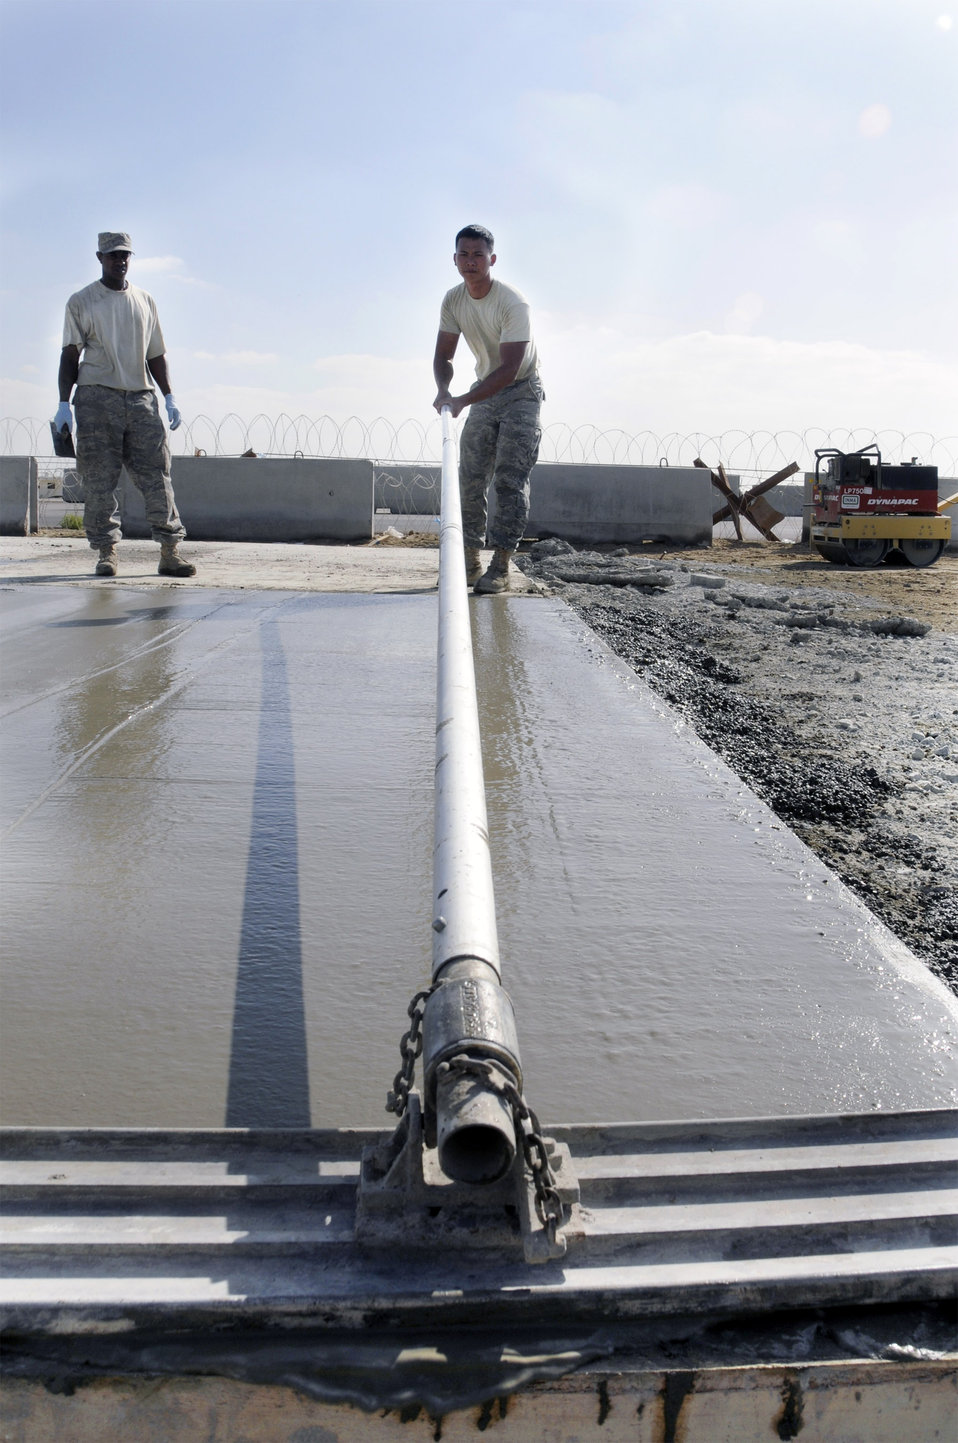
Smooth as glass

Airman 1st Class Anh Nguyen uses a bull float to smooth out the surface of a concrete slab at a Southwest Asia air base Feb 5 while Staff Sgt. Freddie Pitt waits to finish the edges. The slab will be used for a food storage area for a new dining facility at the 380th Air Expeditionary Wing.